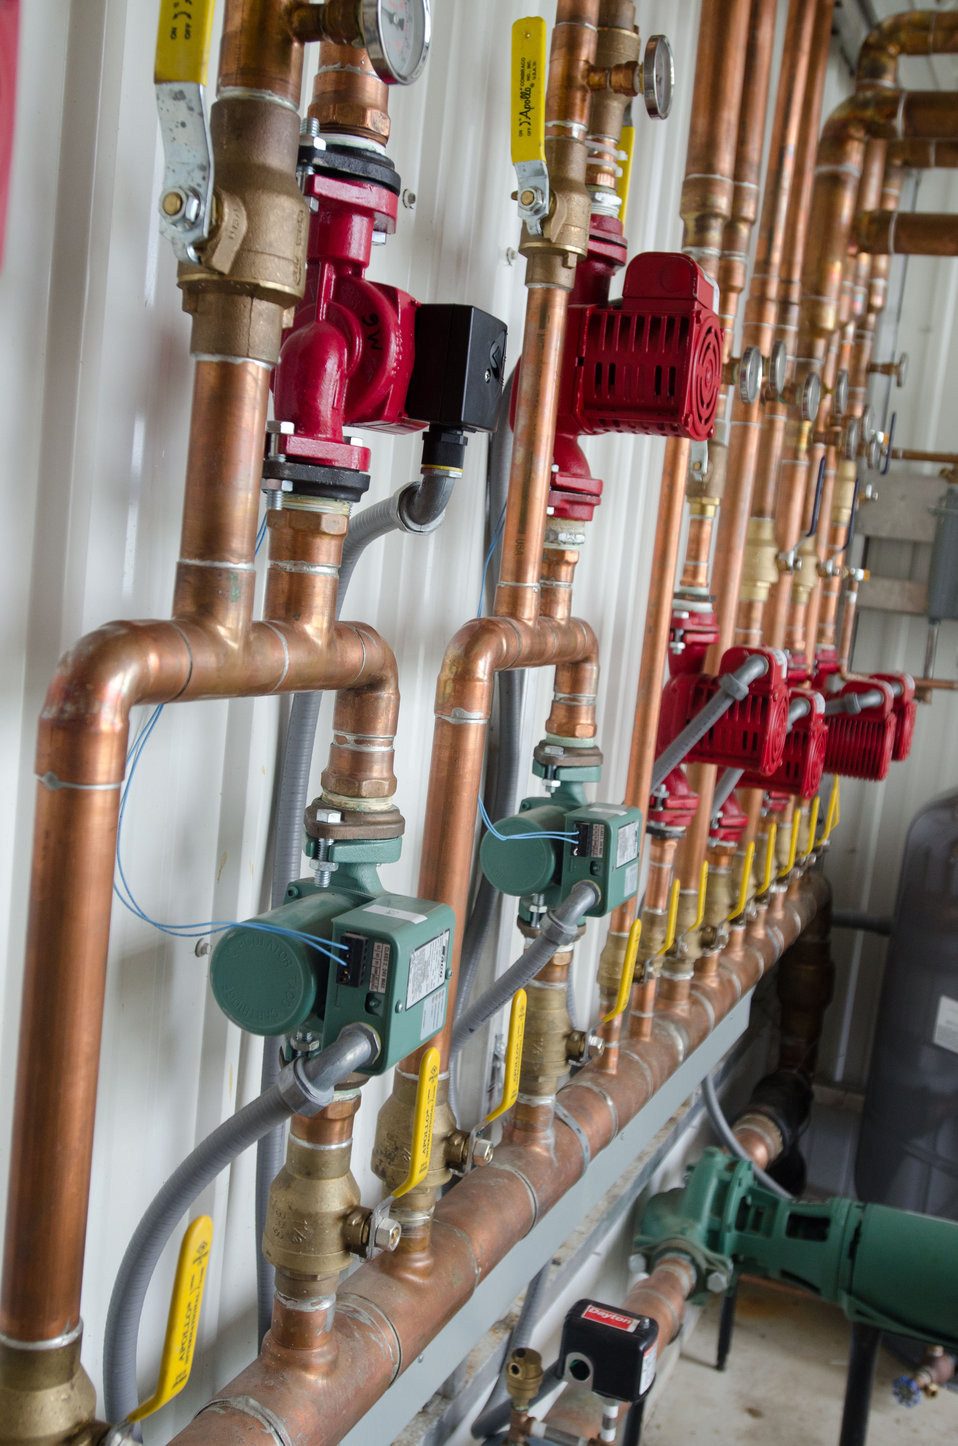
Computer controlled flow and temperature control panel at Good Harvest Farm on April 19, 2011 in Strasburg, PA, completed Rural Energy for America Program (REAP) grant supported renovation six months ago that replaced an 80-year old structure with a new 4,000 sq. ft. facility that features energy efficient glass roof with curtains that block or trap heat, radiant heaters in or above the floor, and the replacement of an oil-fired hot-air furnaces with propane fueled boilers that supply fin-tube and cement embedded tube elements with hot water. With current fuel prices, there is a projected 2011 energy cost savings of more than $20,000; a 40% reduction in energy costs – exceeding projected savings. Plant health and quality has improved and been more consistent because the temperature and humidity is computer controlled and distributed evenly throughout the facility. Utilizing sensors and a roof mounted weather station the system can maintain four different climate zones 24-hours a day. Two 1,000,000 BTU propane fueled boilers heat the water to 190 degrees for the 8,000 feet of fin-tube heating elements were used where the original foundation, and the 8,000 feet of tubing that was embedded in a new cement foundation. After traveling through the energy efficient system, water only looses 20 degrees. When temperatures become to hot, motorized roof vents open to allow rising heat to escape; a 98% energy savings from massive fans that previously forced air out. Both systems create a microclimate in and round the plant trays in the growing and sales room. Representing Good Harvest Farm Chris Powell says, “You don’t need to have a lot of land to have a lot of green houses. There are places in cities where vegetables are grow on store roof tops and selling them below in the same structure.”